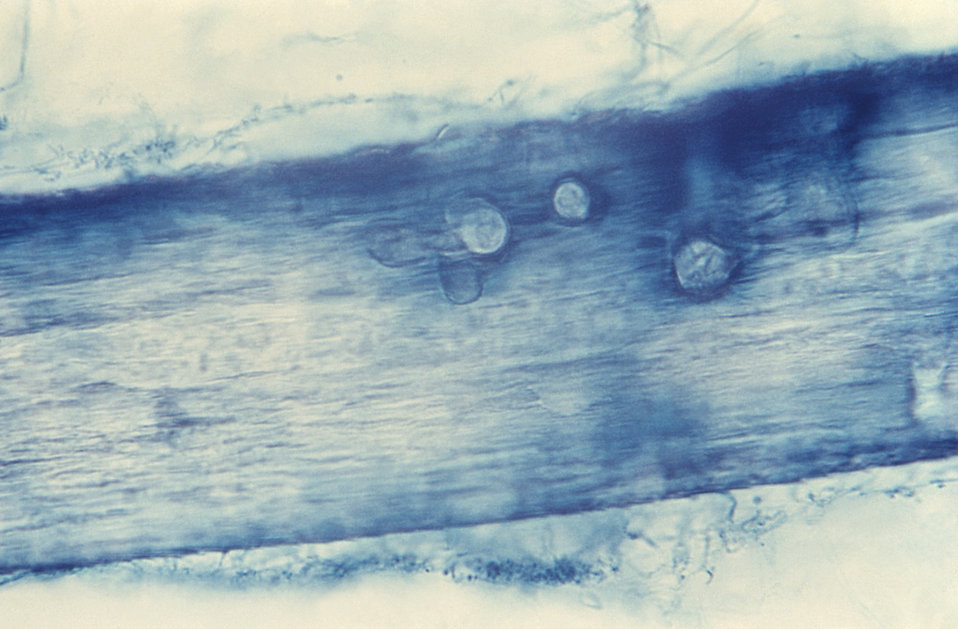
Under a magnification of 475X, this photomicrograph of a single in vitro hair shaft, reveals perforations cut in cross-section, which were caused by the dermatophytic fungus Trichophyton mentagrophytes.